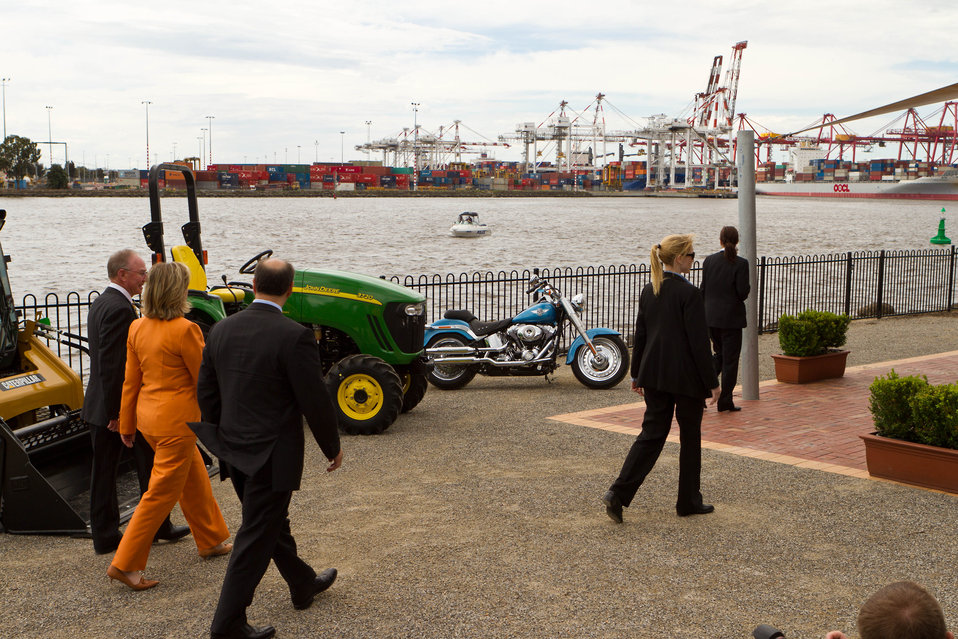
Secretary Clinton and Ambassador Bleich Walk Along the Port of Melbourne

U.S. Secretary of State Hillary Rodham Clinton walks with U.S. Ambassador to Australia Jeff Bleich, right, along the Port of Melbourne in Australia, on November 7, 2010.